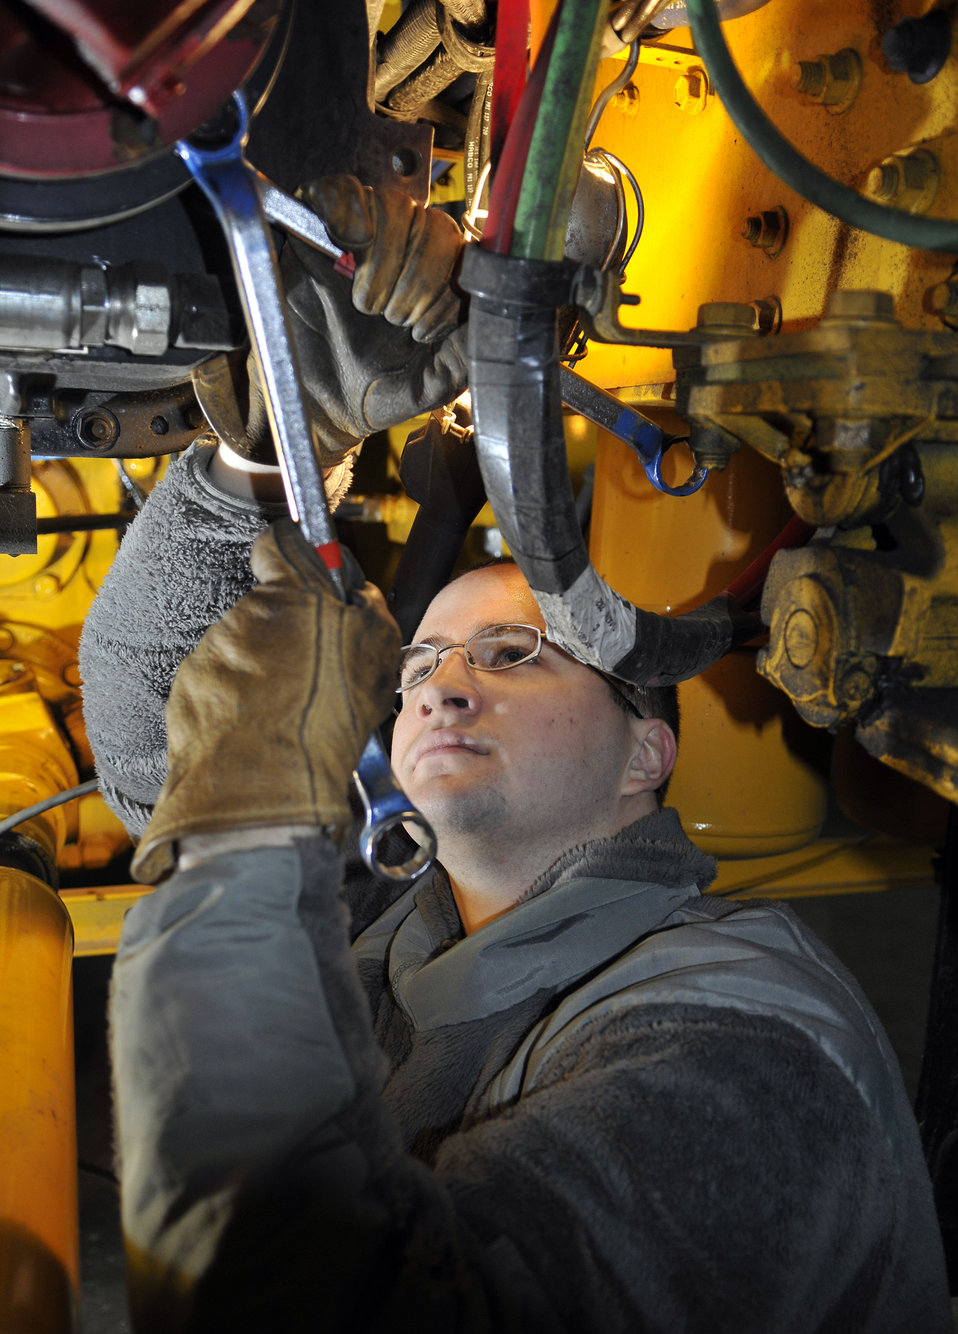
CE Clears the Way

Airman 1st Class Steven Leary inspects shear bolts on a snow blower prior to operation Dec. 16, 2010 at Misawa Air Base, Japan. Shear bolts are designed to break in the event hidden debris in the snow clogs the auger wheel and prevents it from spinning. Airman Leary is a 35th Civil Engineer Squadron pavements and equipment construction technician.